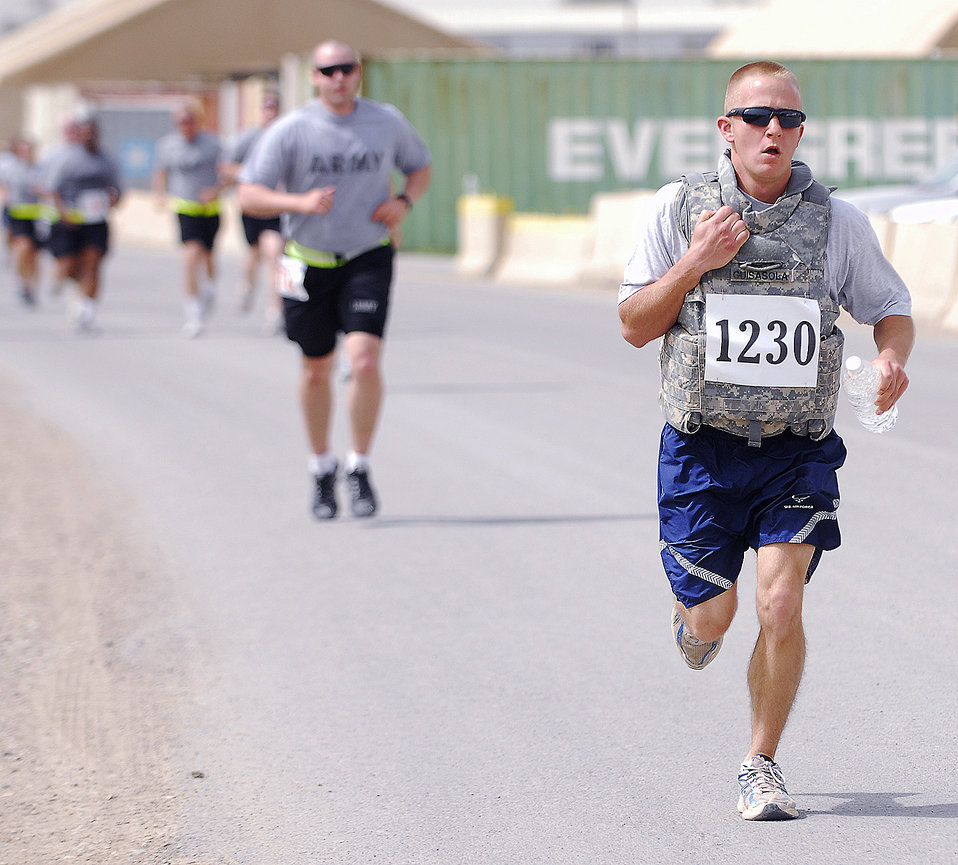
Charity run raises money for American Cancer Society

Airman 1st Class Joshua Guisasola finishes the Relay for Life April 2, 2011, at Kirkuk Regional Air Base, Iraq. Nearly 200 people participated in the event, raising nearly than $4,000 for the American Cancer Society. Airman Guisasola is vehicle maintainer assigned to the 321st Expeditionary Logistics Readiness Squadron.